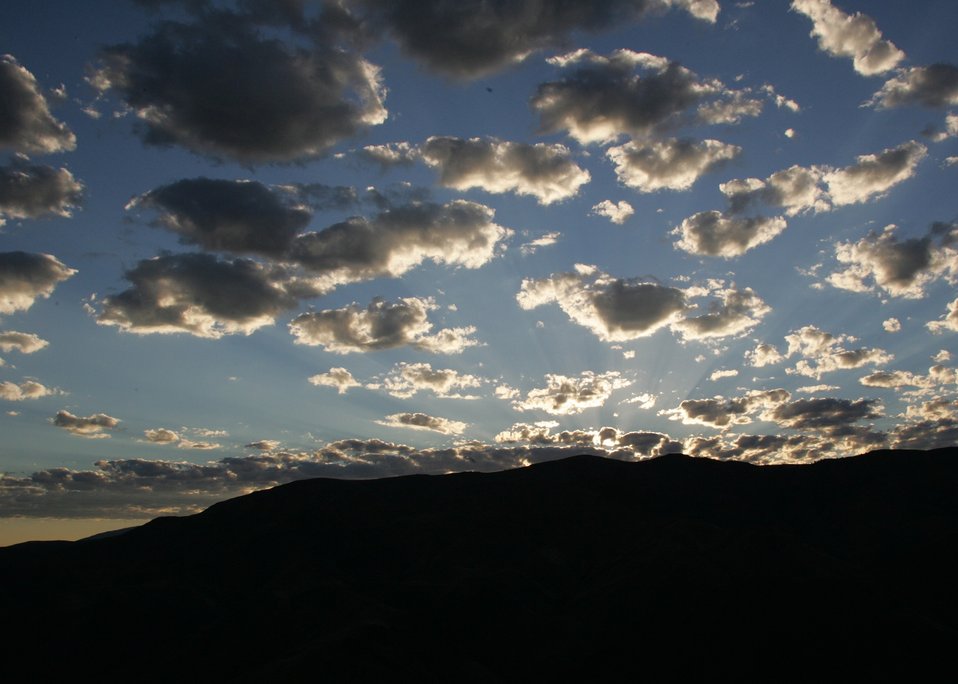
Sunrise on the Snake River Backcountry Byway.